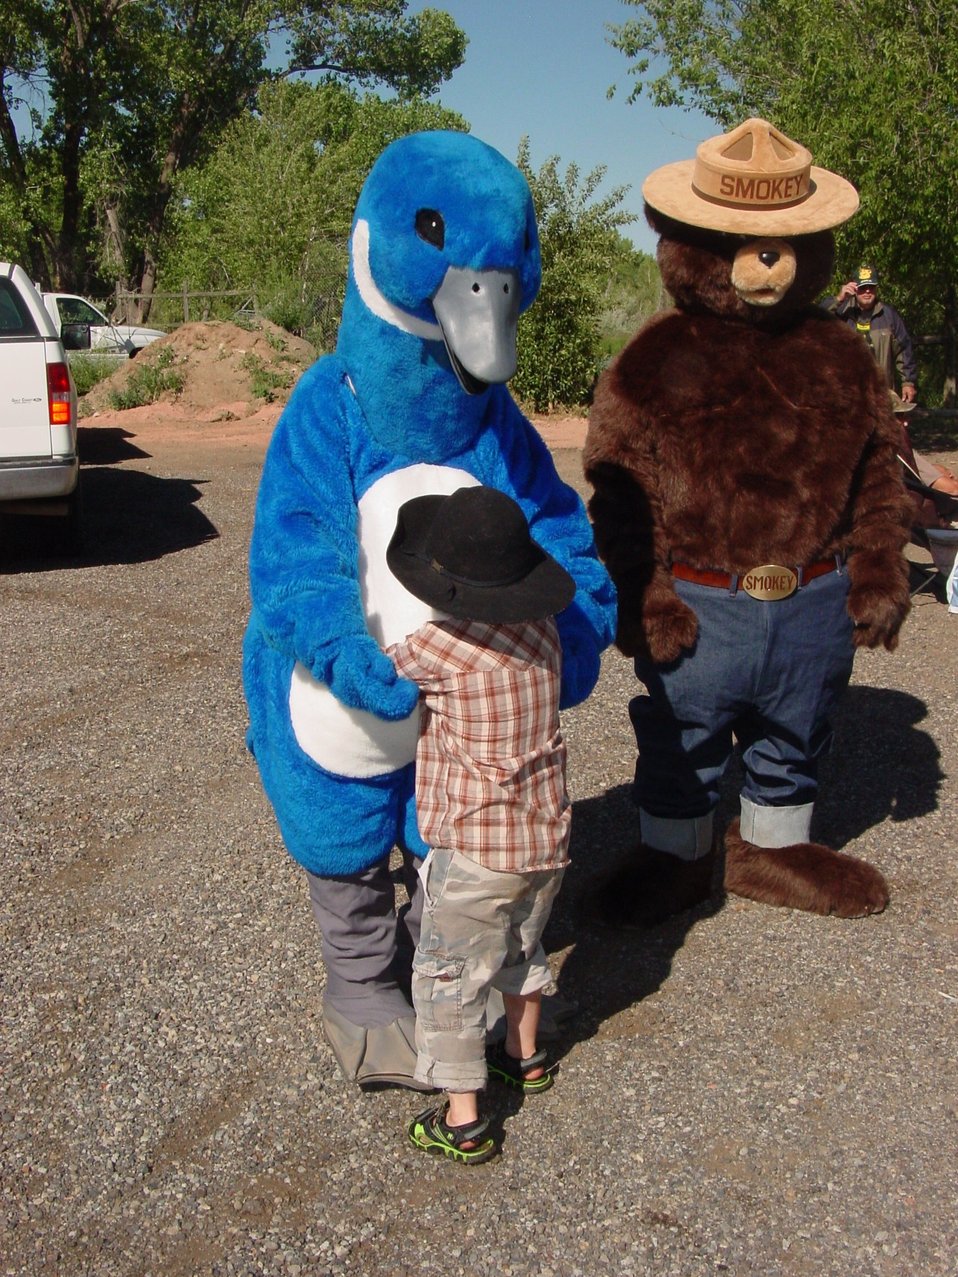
Hotchkiss National Fish Hatchery

The kids, the goose and Smoky pictures were taken at the annual Huck Finn Fishing Derby. Local merchants and sponsors donate derby prizes and time and help with the event. The derby is open to kids ages 3 to 10. The event is hosted annually in June.